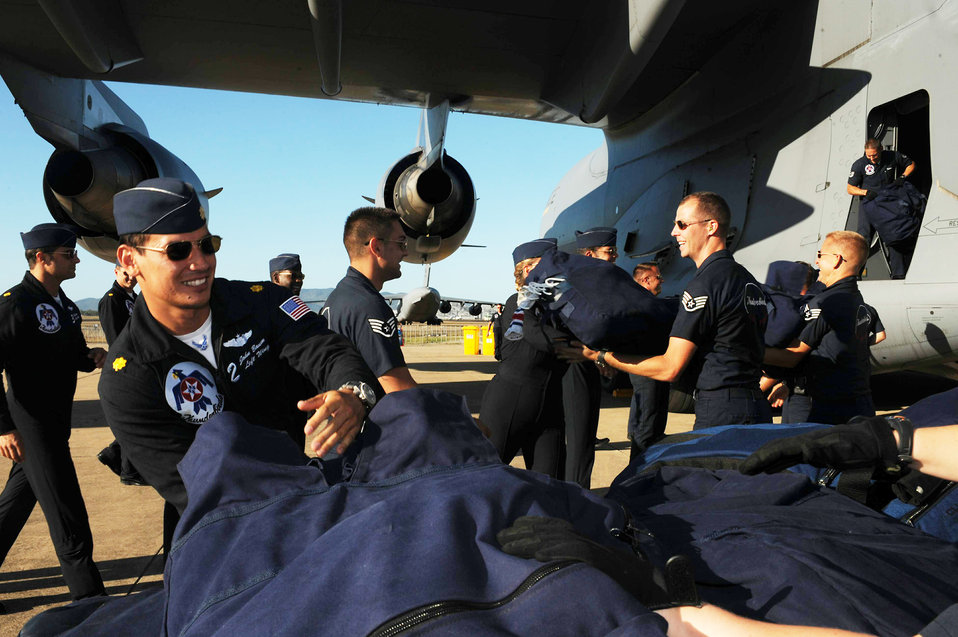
Thunderbirds take the show down under

The Air Force Thunderbirds team unload their gear off of a C-17 Globemaster III Sept. 21, 2009, in Townsville, Australia.